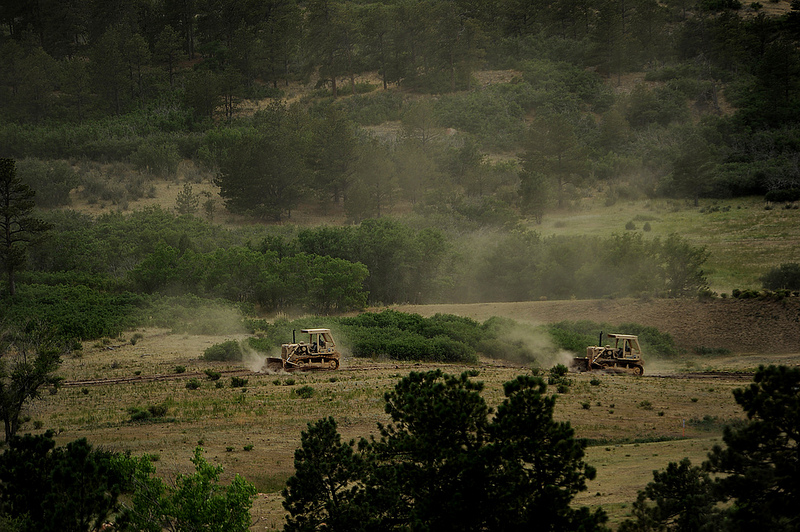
Academy firefighters battle Waldo Canyon fire

Bulldozers from Fort Carson, Colo., cut a fire line at the U.S. Air Force Academy as firefighters continue to battle several fires that burned into the evening hours in Waldo Canyon on June 27, 2012. The fires, which have burned more than 15,000 acres, began spreading to the southwestern corner of the Academy causing base officials to evacuate residents. Officials estimated the fire had spread to about 10 acres of Academy land.